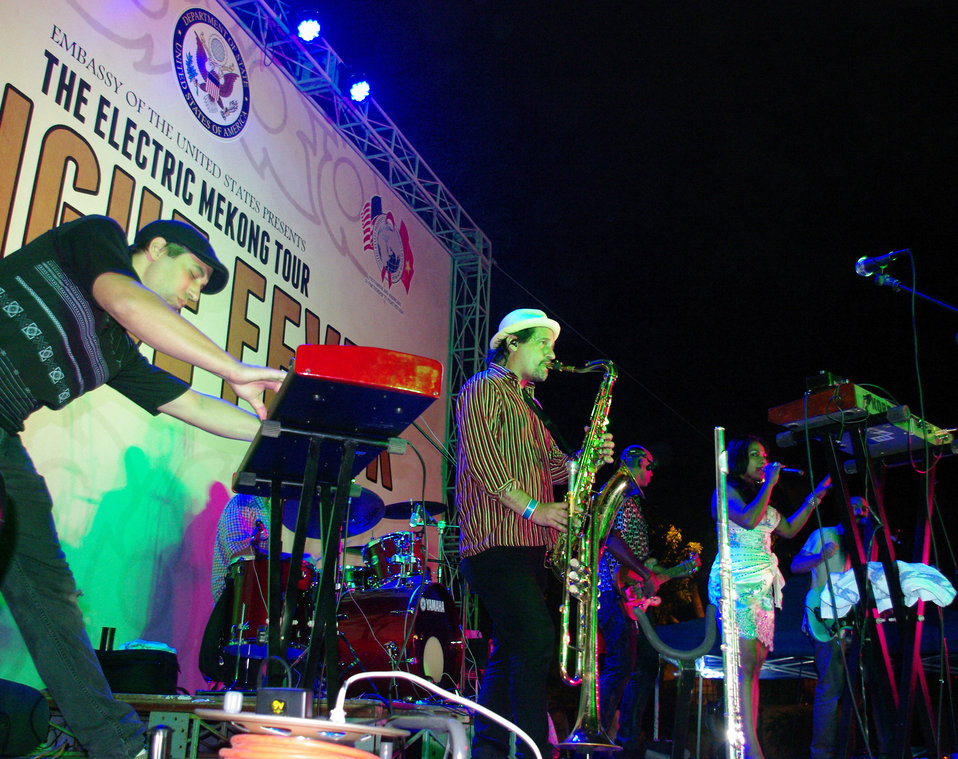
PEPFAR, U.S. Embassy Host Dengue Fever Concert in Hanoi